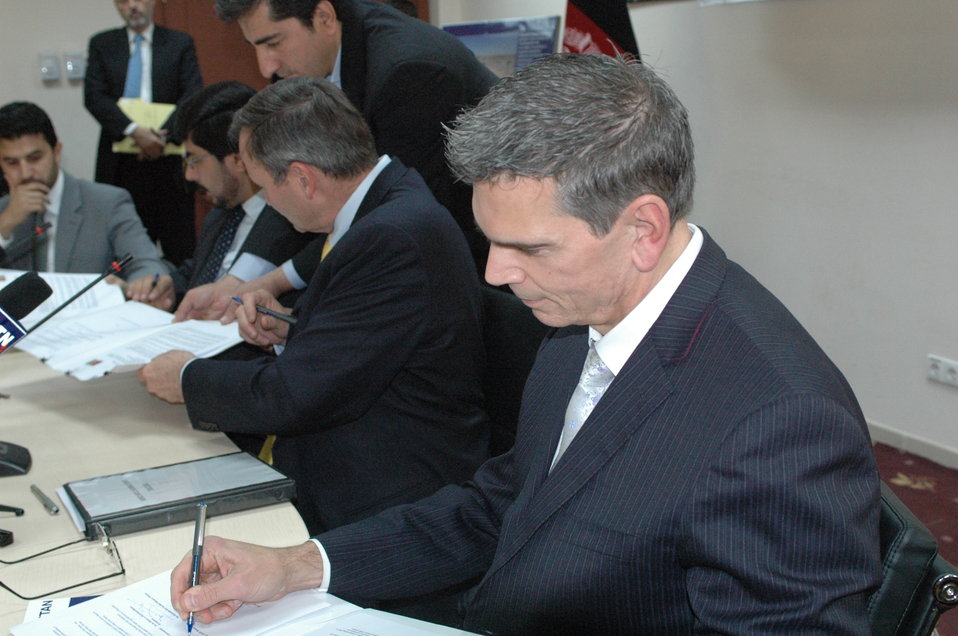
Community Based Stabilization Grants Ceremony, December 7, 2010